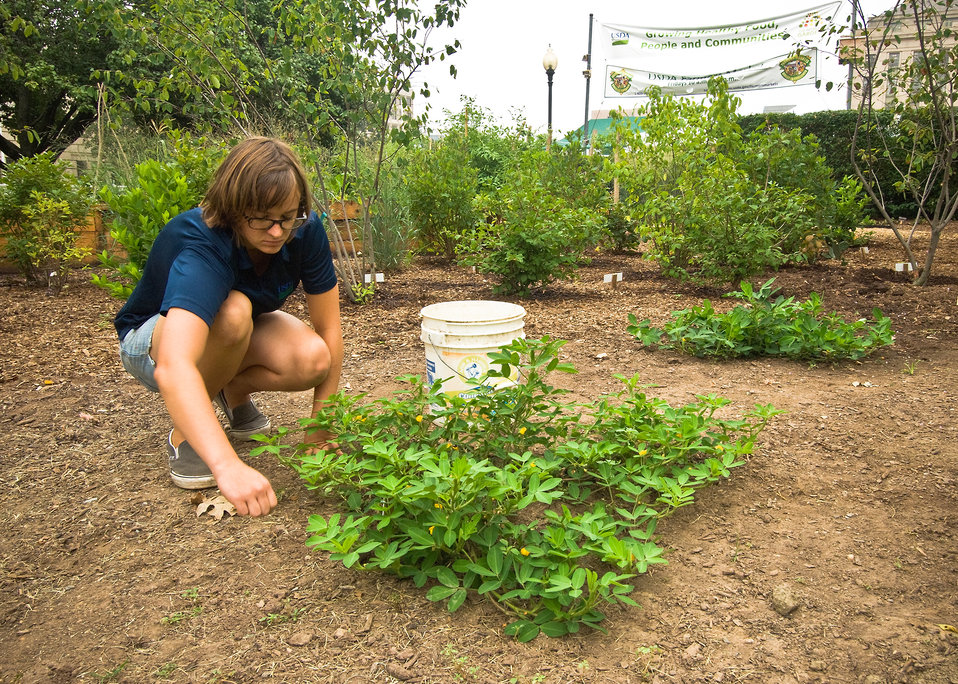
Meredith Kotelec, a University of Maryland intern with the U.S. Department of Agriculture's Office of Operations tends to The People's Garden.
USDA Photo 09di1541-02